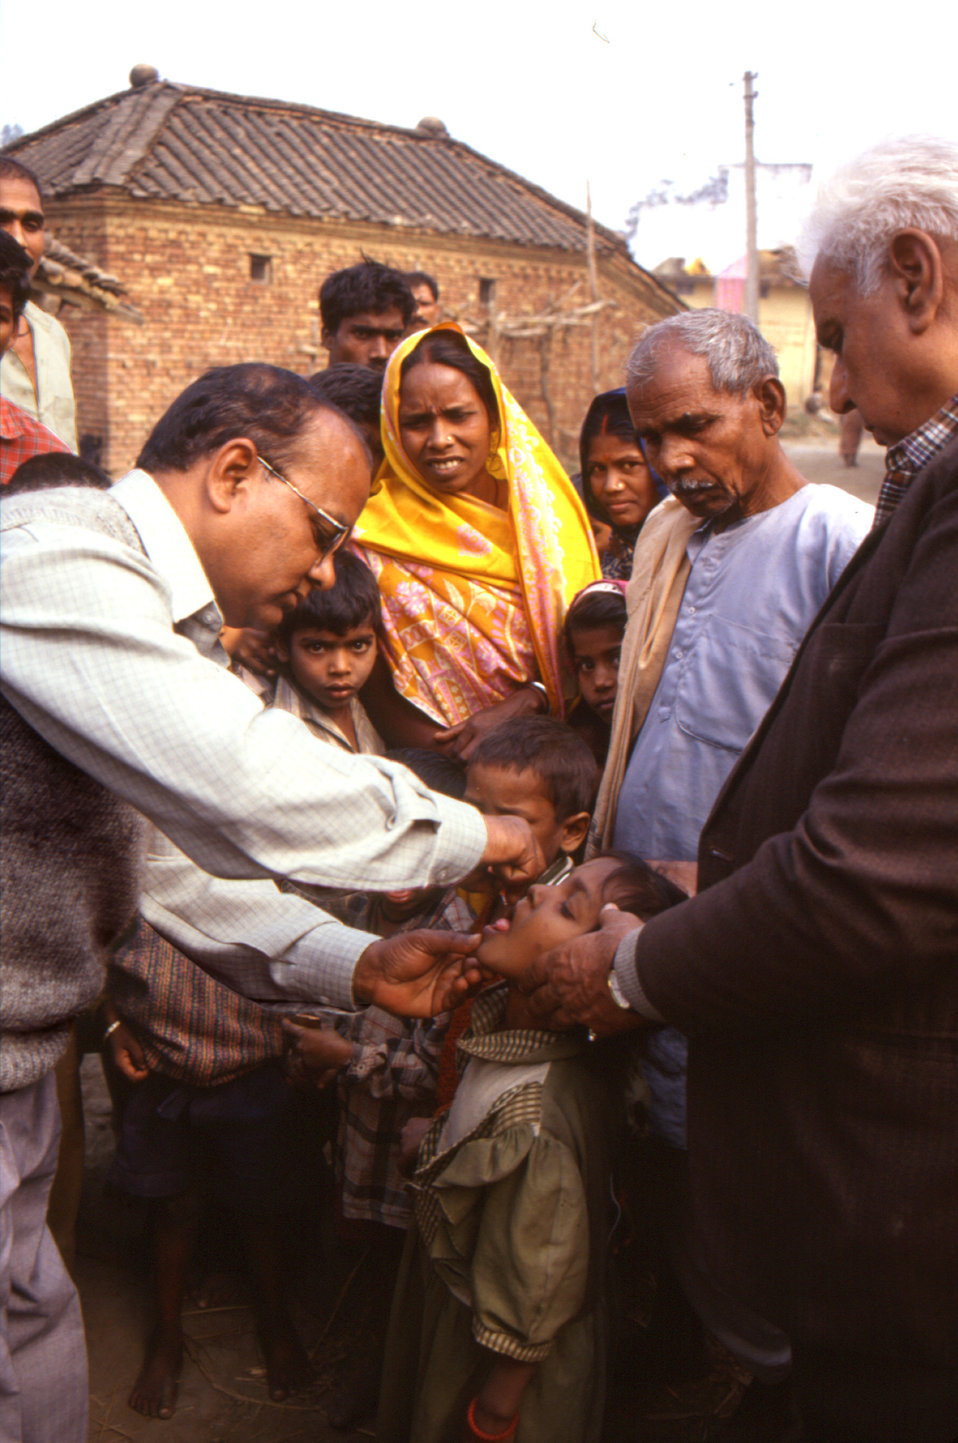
This 2000 photograph depicted a local Indian public health care practitioner administering an oral polio vaccine dosage to a child in an outside setting, in one of the country's many villages. After being vaccinated, one of the child's fingers would be marked with an ink marker designating to other health care workers that he'd been vaccinated during the National Immunization Day campaign. The image was provided by Chris Zahniser, B.S.N., R.N., M.P.H., a STOP team member and photographer, who was assigned to the state of Uttar Pradesh in northern India, and spent three months working in the Districts of Gorakhpur and Deoria.